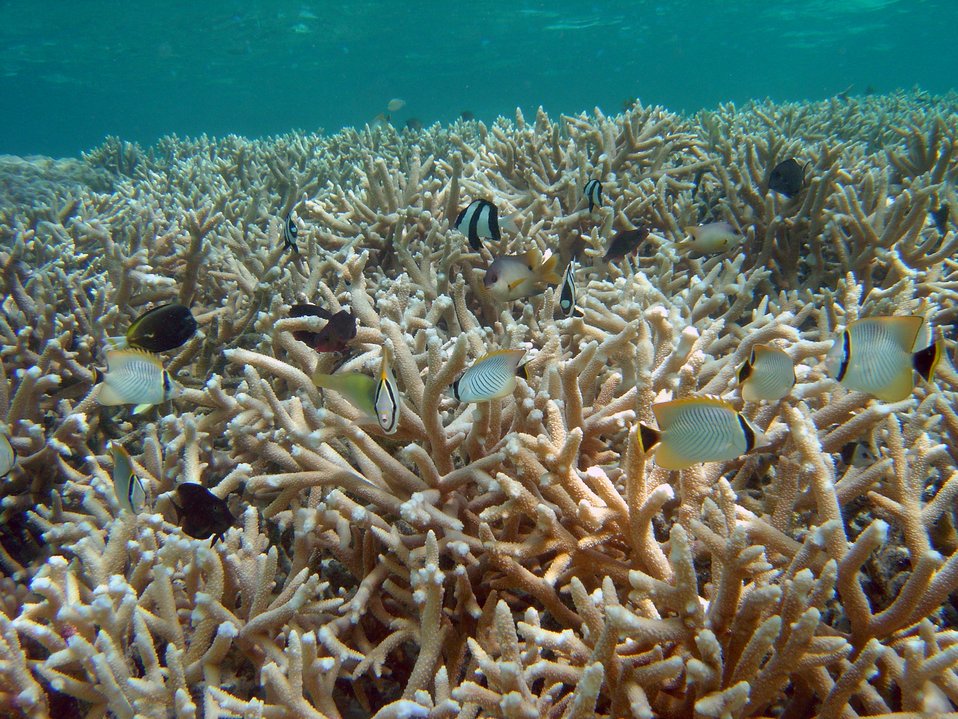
Chevroned butterflyfish (Chaetodon trifascialis) and assemblage of other species